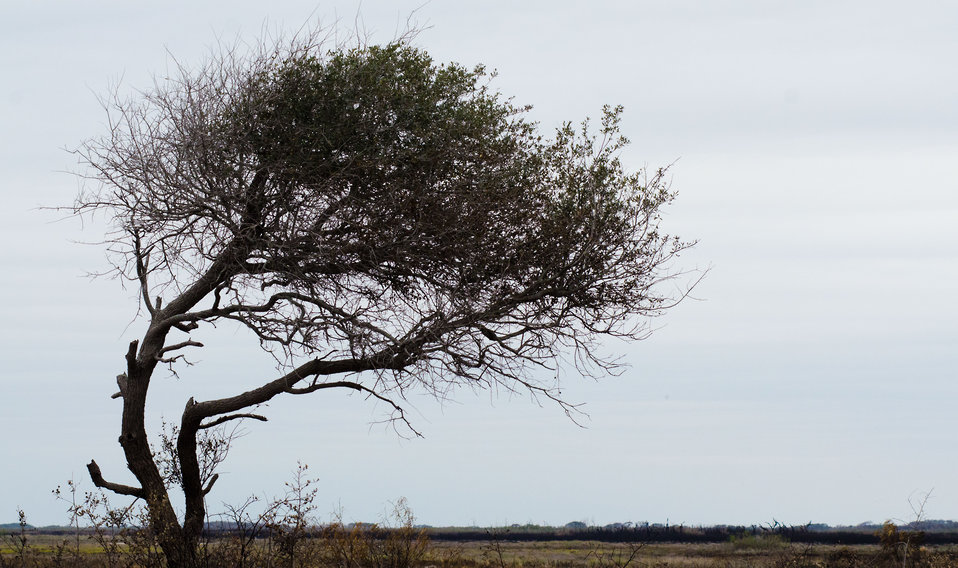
A lone tree stands in a field week after prescribed burns were used on this coastal prairie on the Aransas National Wildlife Refuge, in Austwell, TX, on Friday, December 16, 2011. Typical of a coastal prairie shoreline, natural occurrences of fire are part of a healthy ecosystem. Phragmites reed grass and other plant roots stabilize the ground and are unharmed by the fire. Healthy growth is already seen from the charred grass and ashes on the ground. A refuge road also serves as an effective firebreak.
State Conservationist Salvador Salinas commented on the USDA-NRCS Gulf of Mexico Initiative (GoMI) during a press conference, about improving water quality, habitat, and the health of the Gulf ecosystem. “Launching this initiative is a top priority for NRCS in Texas because the Gulf of Mexico is one of our state’s premier natural resources. It provides vital habitat for wildlife, and creates jobs in industries that depend upon them. The health of this resource is essential to Texas as well as to the nation,” said Salvador Salinas. The Texas initiative focuses on three watersheds in Refugio, Calhoun, Victoria and Aransas counties and ultimately the Gulf of Mexico.
“What is really compelling about GoMI and other similar conservation efforts is that they prove that Texas farmers and ranchers not only feed and clothe us and power our vehicles, but they can also help protect and restore our rivers and provide more habitat for wildlife,” stated Salinas. “That’s why it is important that this conservation project is not about taking productive farm land out of production. This is a working lands initiative, so that not only are we helping to restore the health of the Gulf, but we’re also helping to sustain and enhance the productivity of the Gulf’s farms and ranches.”
Nationally, USDA-NRCS is dedicating up to $50 million over three years to this effort.
NRCS will continue to provide proven technical expertise and that of their partners. The anticipated result is improved water quality, stream flows and wildlife habitat.